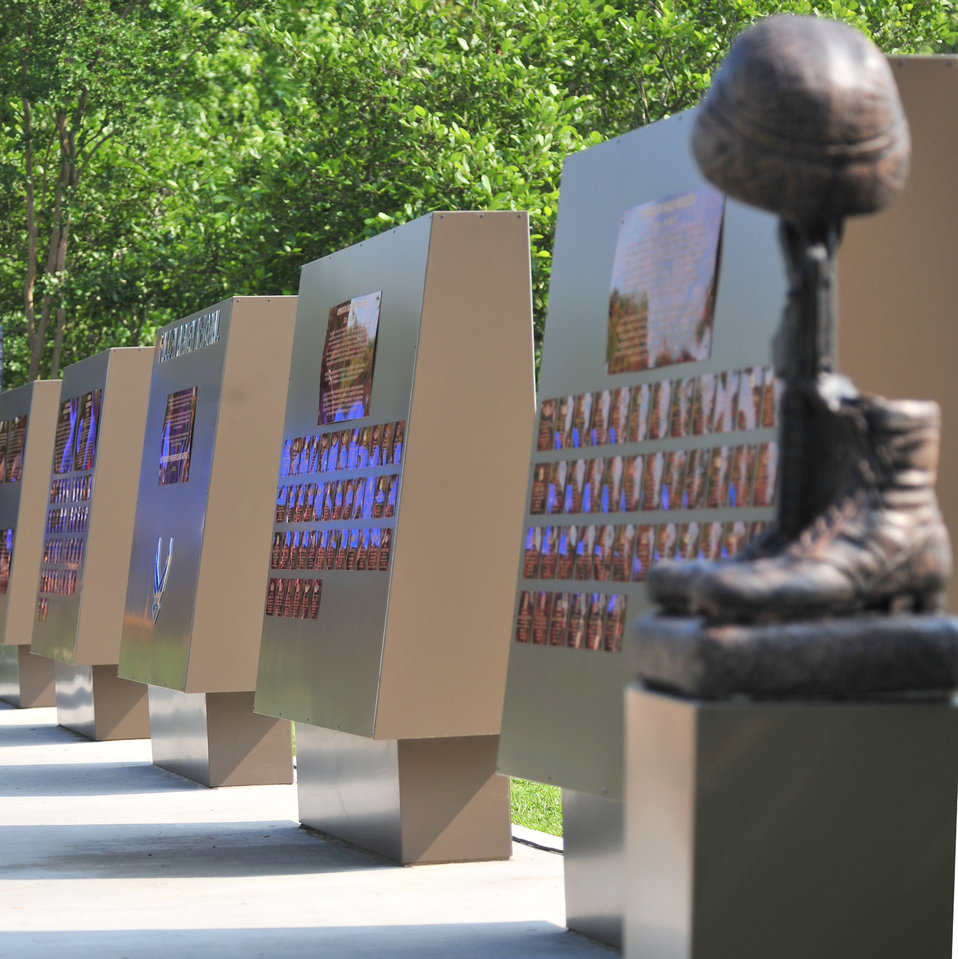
Fallen Airmen Memorial

The Fallen Airmen Memorial at Memorial Lake, S.C., is dedicated to all Airmen who have died in combat.